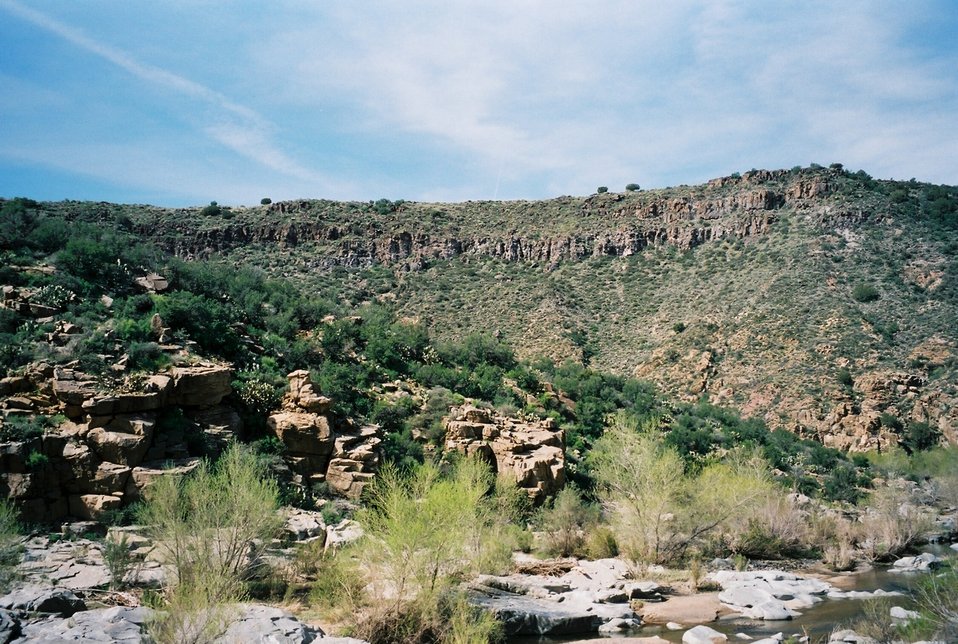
Another landscape in the Agua Fria National Monument backed by the blue Arizona sky.